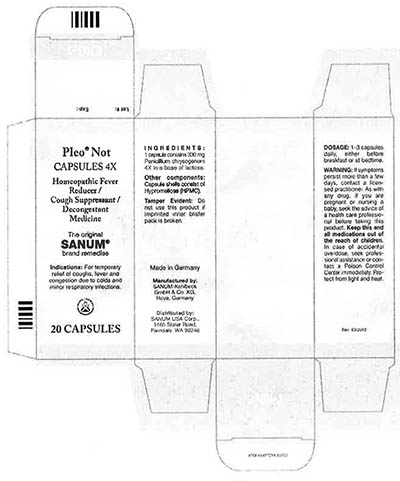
RECALLED – Homeopathic Drug Products

March 18, 2014 – Product Recall – Terra-Medica Issues Voluntary Nationwide Recall of Specified Lots of Pleo Homeopathic Drug Products Due to the Potential for Undeclared Penicillin.